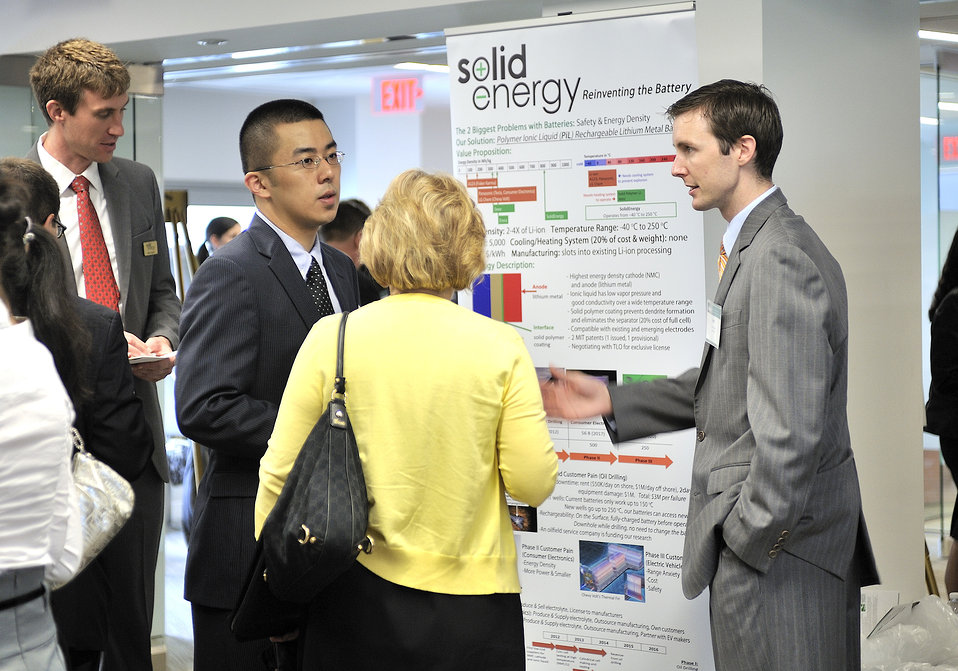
National Clean Energy Business Plan Competition

The National Clean Energy Business Plan Competition inspired nearly 300 university teams across the country to create new businesses to commercialize promising energy technologies developed at U.S. universities and the National Laboratories.